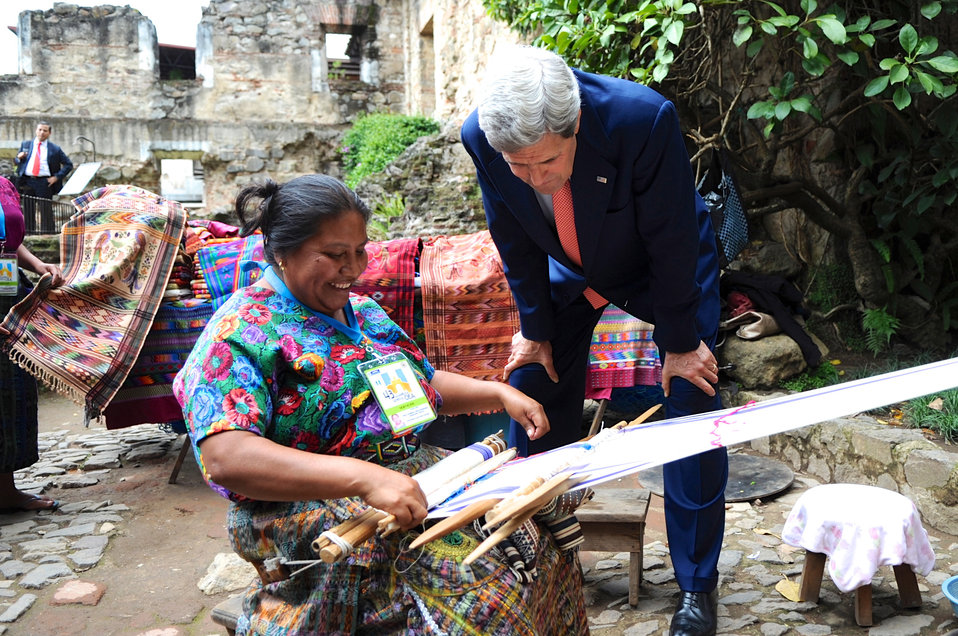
Secretary Kerry Examines Goods Made By a Textile Worker

U.S. Secretary of State John Kerry examines goods made by a textile worker during a break in an Organization of American States meeting in Antigua, Guatemala, on June 5, 2013.